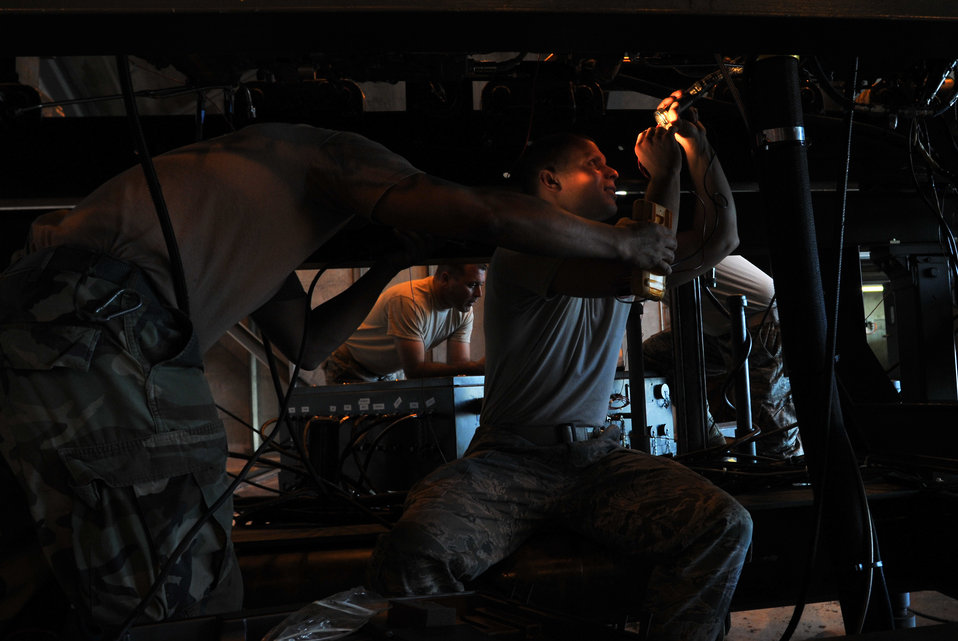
F-15 Eagle engine test run

Tech. Sgt. Samuel Lee (left) and Staff Sgt. Robert Gonzalez perform diagnostics on an F-15 Eagle engine to trace an error code revealed during an engine test run November 10, 2010, at the Florida Air National Guard base in Jacksonville International Airport, Fla.